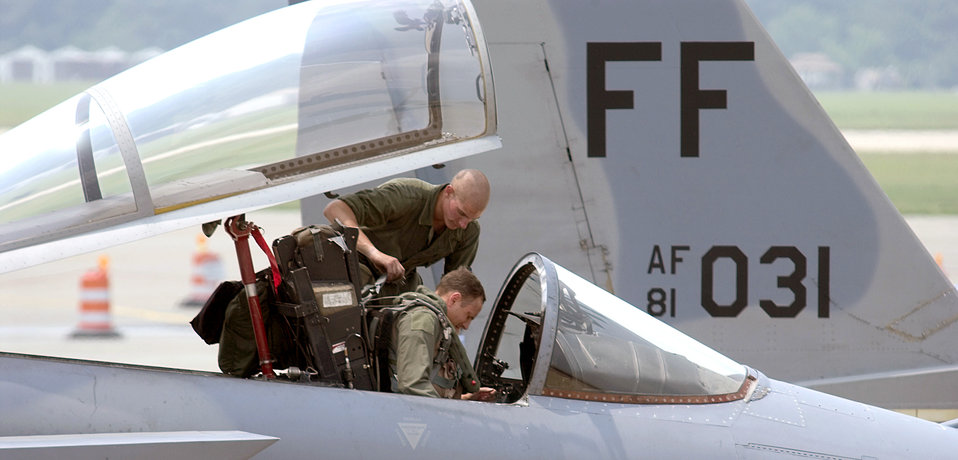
Sky patrol

LANGLEY AIR FORCE BASE, Va. -- Airman 1st Class Caleb Saunders and Maj. John Braun make adjustments to an F-15 Eagle cockpit seat in preparation to fly a combat air patrol mission from here July 1. Pilots patrolled the sky over the Washington, D.C., area providing presidential support during the Fourth of July weekend. Major Braun is an F-15 pilot with the 94th Fighter Squadron, and Airman Saunders is assigned to the 94th Aircraft Maintenance Squadron.